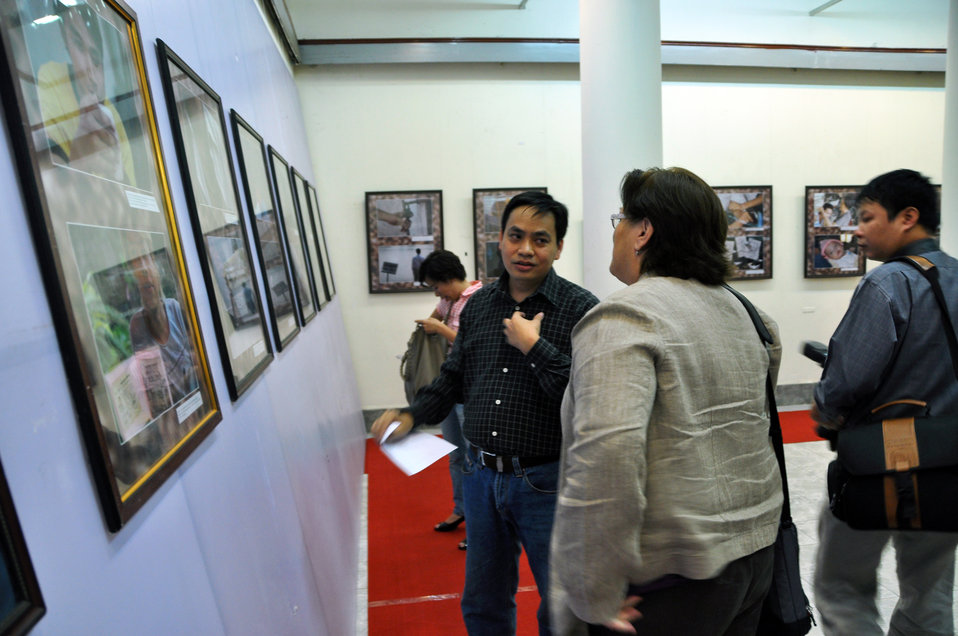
Moments in Life Photo Exhibit